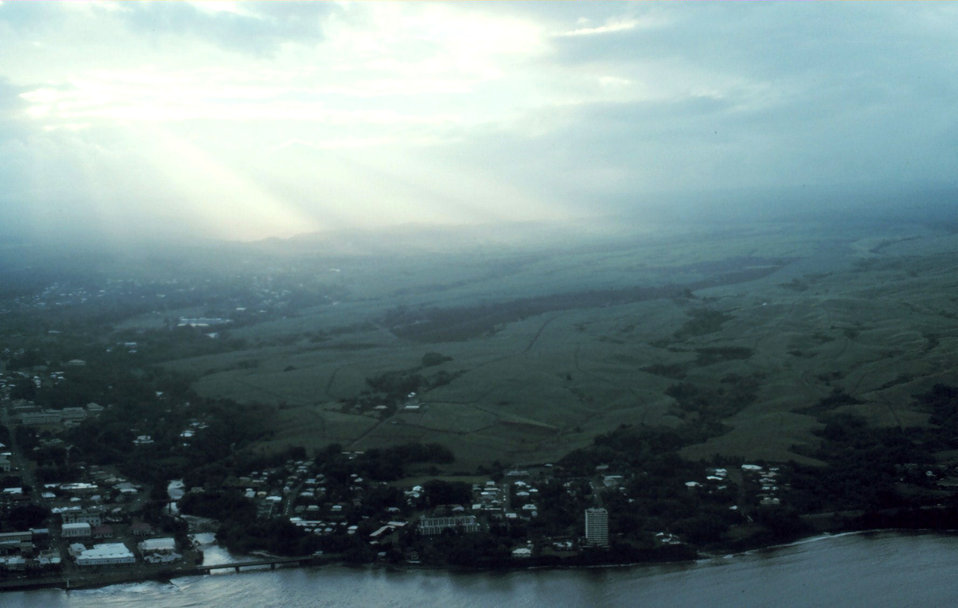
Hilo from the air while flying to Kauai